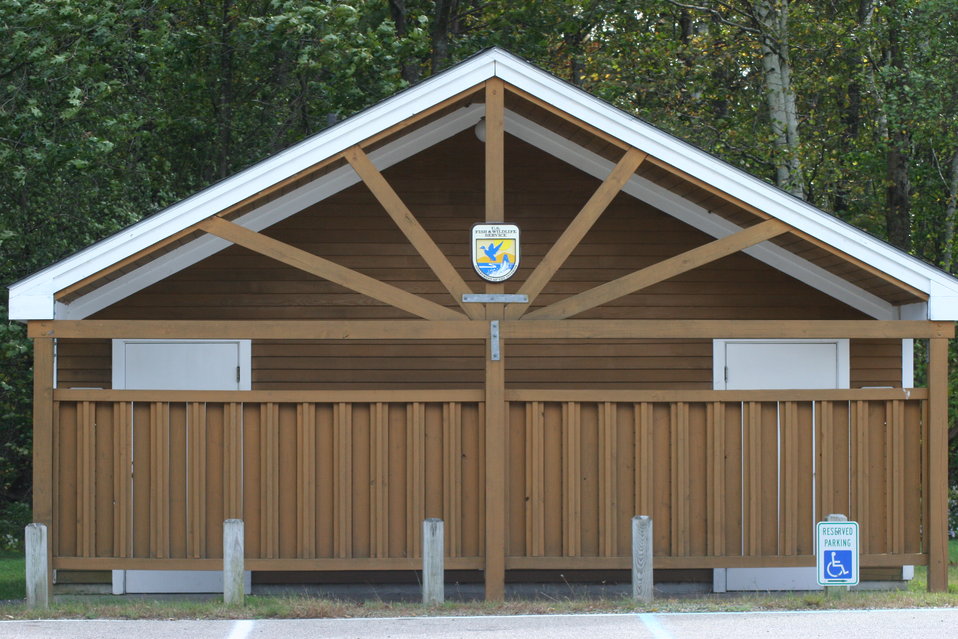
Great Bay National Wildlife Refuge, Newington, NH.